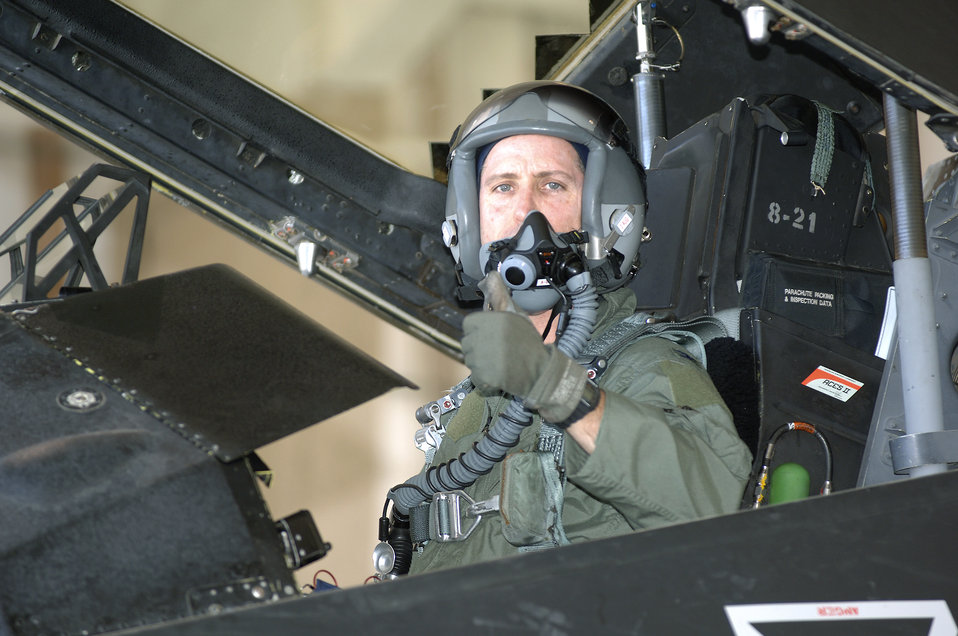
Flight commemorates 250,000 hours for Nighthawks

Col. John Forsythe signals he is ready to depart on a special flight July 25th at Holloman Air Force Base New Mexico. The flight was commemorating 250,000 hours of operation by F-117 Nighthawks. Colonel Forsythe is the 49th Operations Group commander.